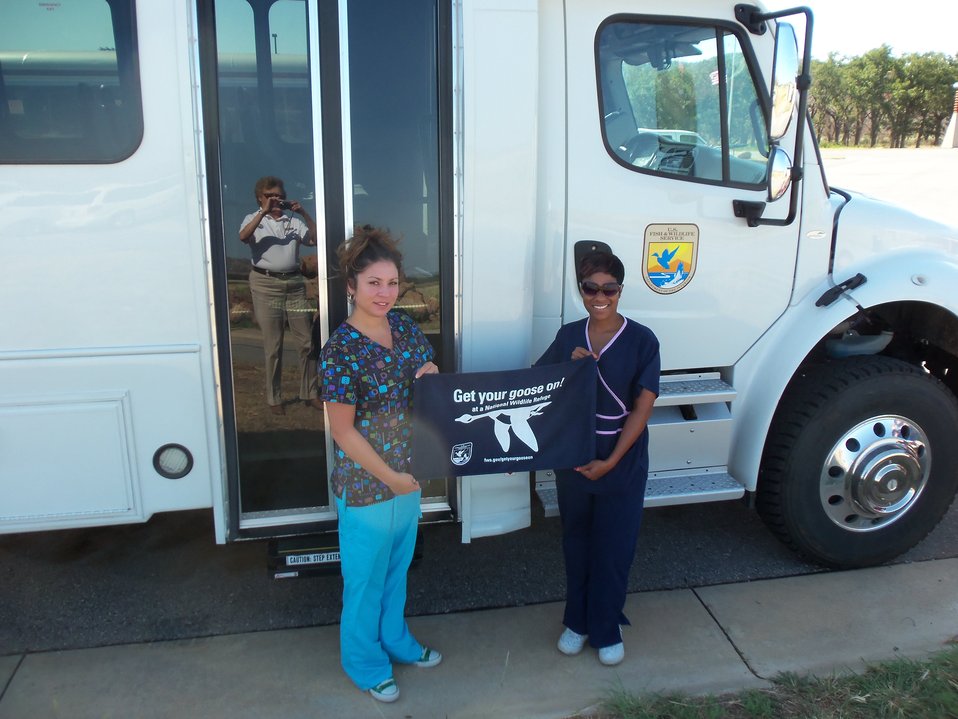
Get Your Goose On!

Wichita Mountains National Wildlife Refuge in Oklahoma.